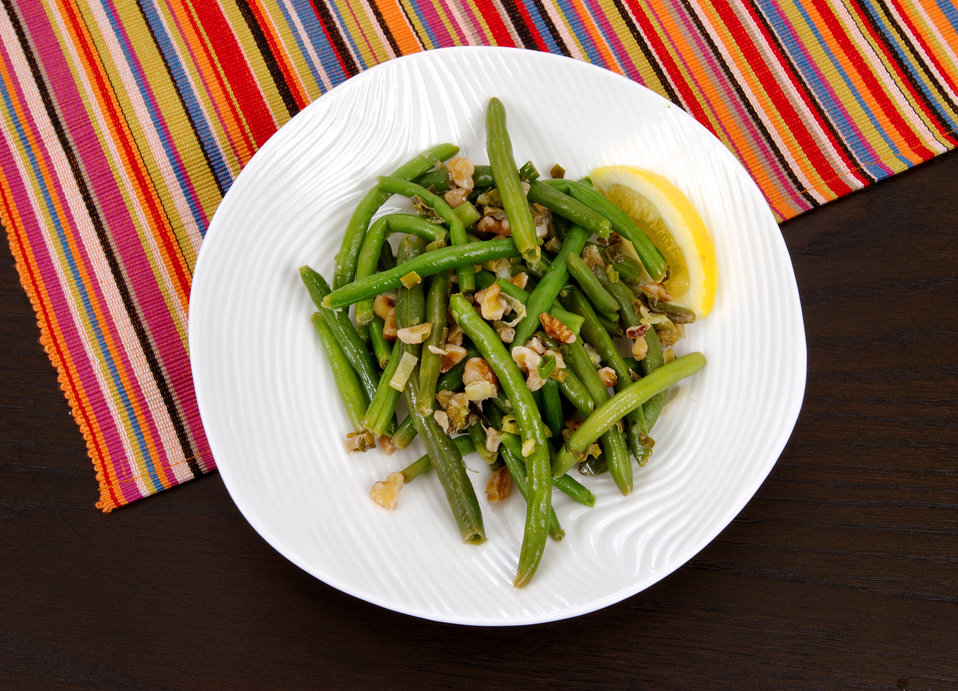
This image depicts a close-up of a single serving of Lemon-Walnut Green Beans. Based on its ingredients, this dish is a very healthy choice as a meal, side dish, or even a snack.